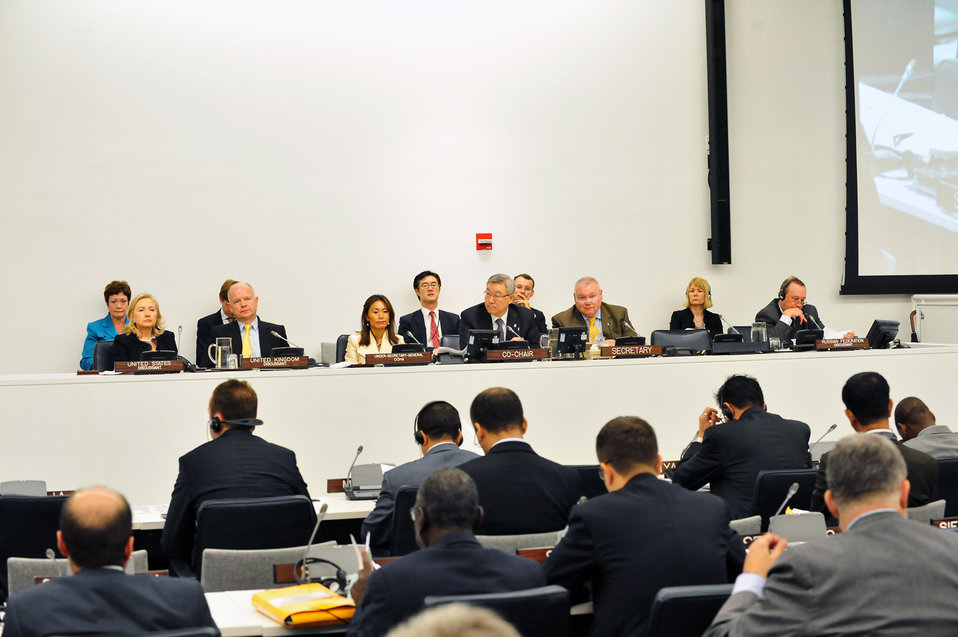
Secretary Clinton Participates in the UN High-Level Meeting on Nuclear Safety and Security

U.S. Secretary of State Hillary Rodham Clinton participates in the UN High-Level Meeting on Nuclear Safety and Security, at the United Nations in New York, New York, on September 22, 2011.